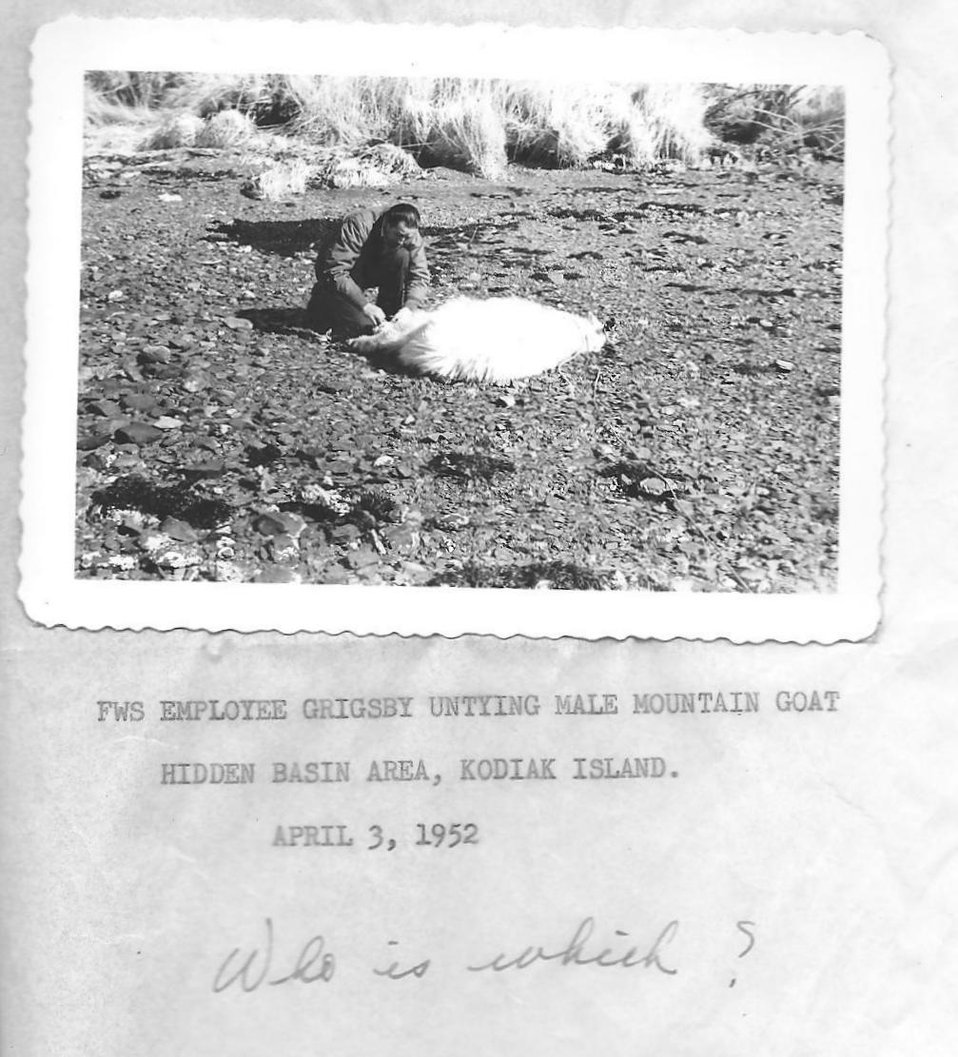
(1952) Who is Which

Credit: USFWS

Source and Contact: Kodiak National Wildlife Refuge